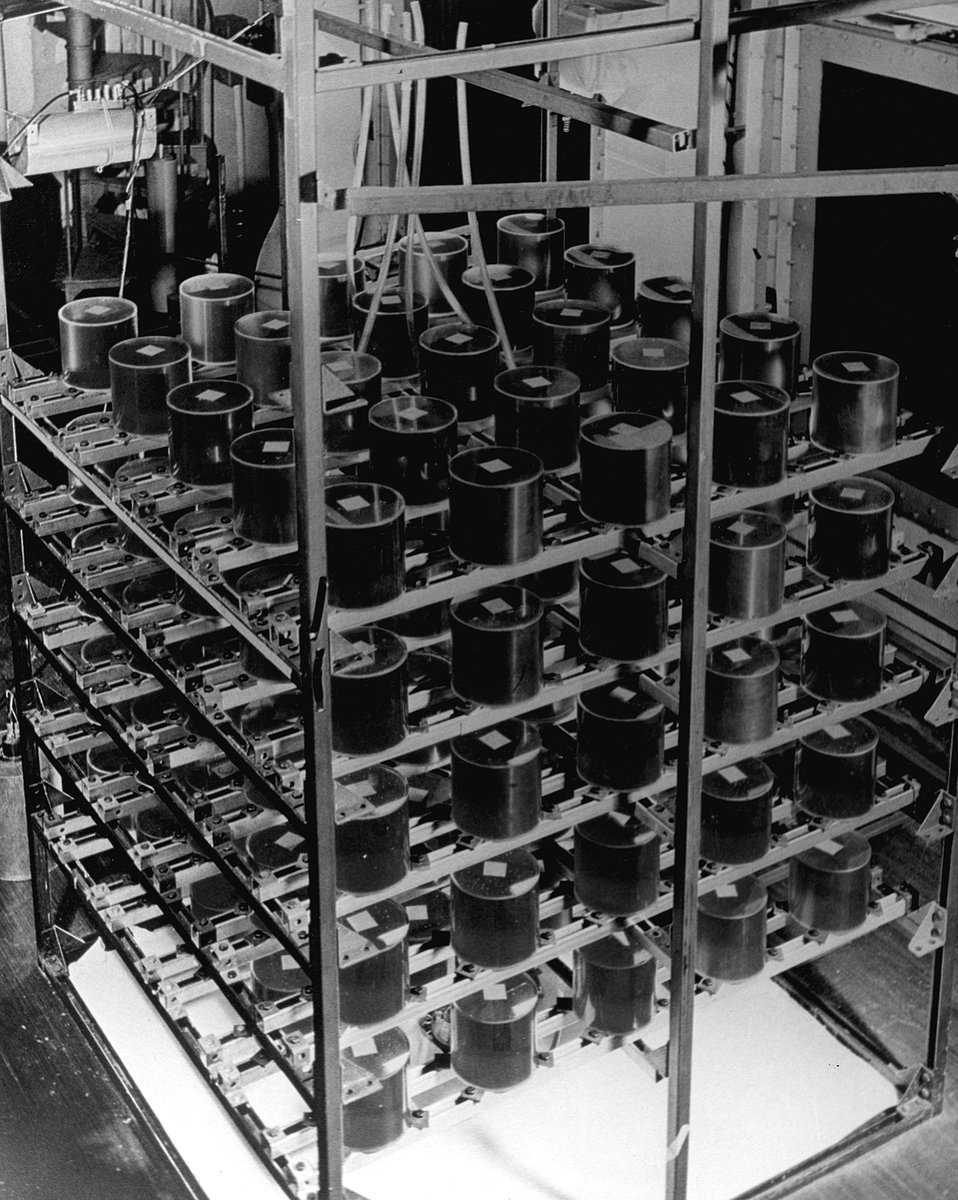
A critical array of plastic cylinders containing uranium highly enriched in uranium-235 was used in a study of the neutron interaction between sub critical units. c. 1973